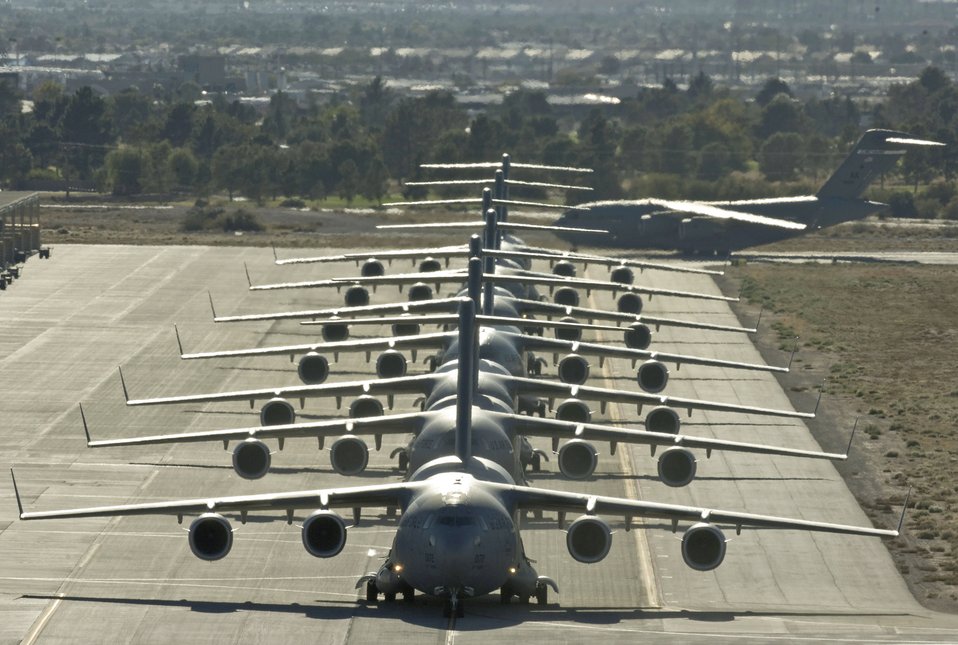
Follow the leader

C-17 Globemaster III aircraft line up on the runway during the Mobility Air Forces Exercise held at Nellis Air Force Base, Nev., and over the Nevada Test and Training Range, Nov. 17, 2010. Approximately 40 C-17 Globemaster III and C-130 Hercules aircraft will assemble over the test range to conduct air operations.